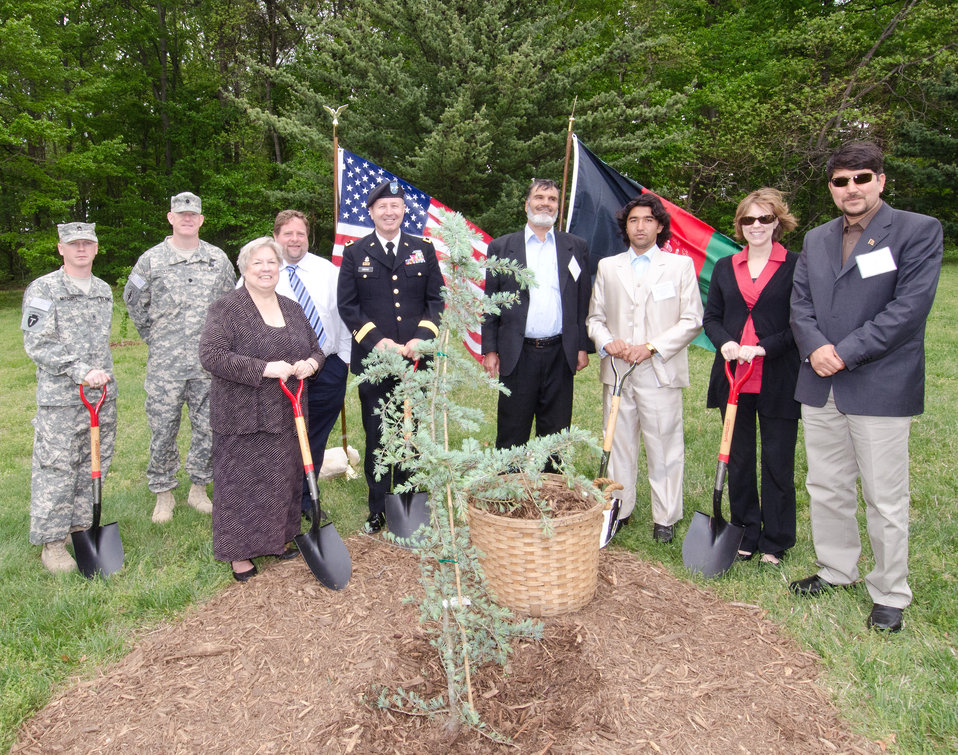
The Arbor Day tree planting of a Cedrus deodara ('Karl Fuchs') at the National Arboretum, was attended by (l-r) Animal Specialist for Agribusiness Development Team (ADT) 4 Staff Sgt. Justin Mitchell, Director of ADT Program, National Guard Bureau Lt. Col. Howard Schauer, Director of U.S. National Arboretum Director Dr. Colien Hefferan, National Arboretum Gardens Unit Leader Scott Akers; Special Assistant to the Director, Army National Guard Major General Darren Owens, Ghazni Directorate of Agricultural Irrigation and Livestock Sultan Hossain, Ghazni University Senior Agricultural Student Abdul Fatah, Agriculture Deputy Under Secretary of Farm and Foreign Agricultural Services Darci Vetter, District Governor of Jaghori District Zafar Sharif and others. The tree is originally from Pakta Province and the most important tree in Afghanistan for timber.